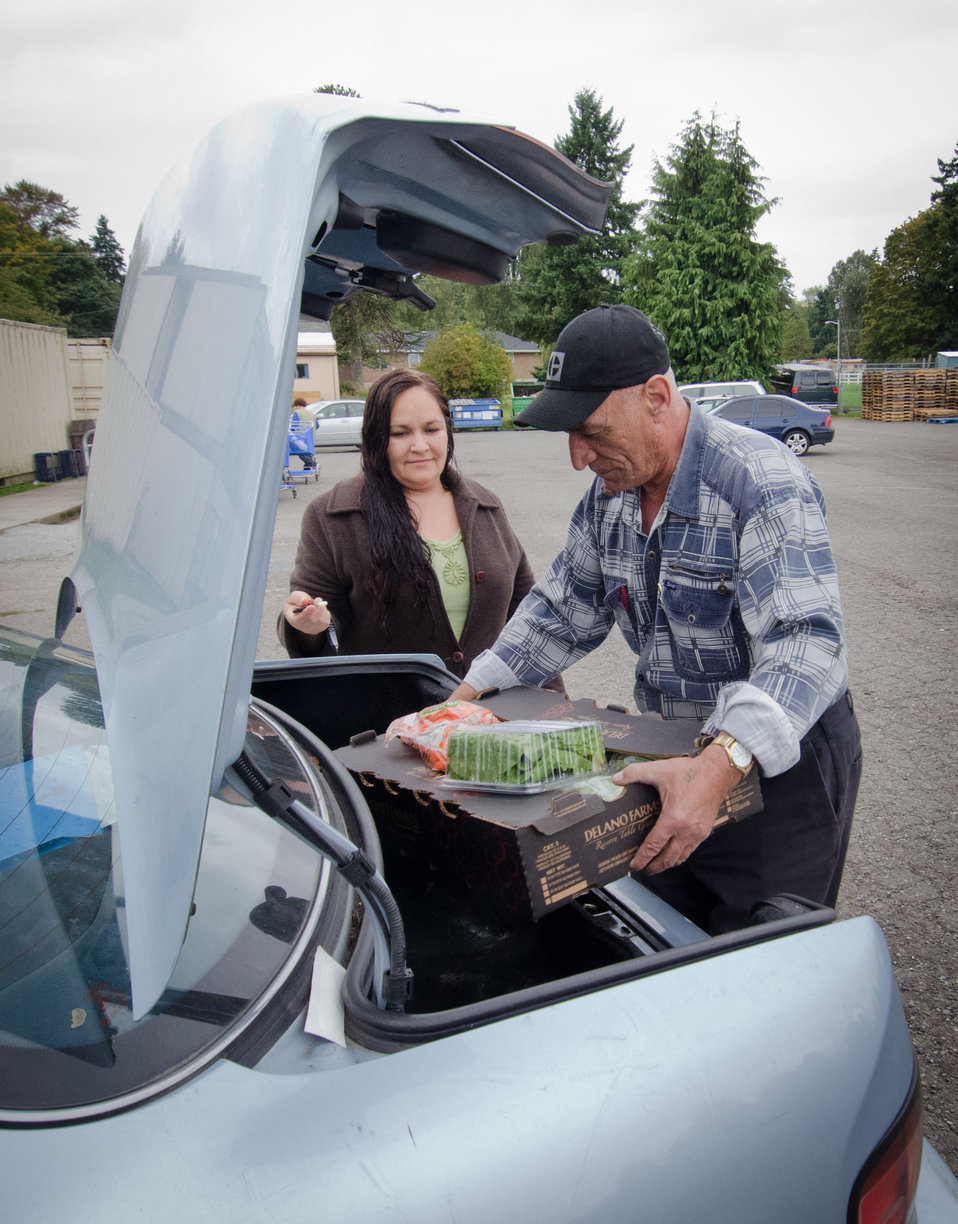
Mekhredze Telman (right) puts a box of produce in Amanda Arthur's car, at Tukwila Pantry, Tukwila. WA, on Thursday, October 20, 2011. The pantry provides monthly food bank services to individuals and families in cities of Tukwila, SeaTac, Burien and the Boulevard Park community. Congregate meal service is held each Tuesday at their location in the Riverton Park United Methodist Church. The church provides some funds, several large rooms, and outdoor operating space for the pantry’s food distribution, shipping container storage units, trailer, tents, shelters and refrigeration truck. The pantry's weekly Tuesday’s Table provides 150 hot meals to seniors, low-income families, homeless individuals and those in transition. Additionally, emergency referral services are provided to assist individuals connecting with agencies that can address their needs. Executive Director Joe Tice grew up in Tukwila and feels compelled to give back to economically challenged community of 25,000 families in 3,000 households. “Since the pantry’s founding in 2000, census figures show poverty has risen 300%,” said Joe Tice. “85-95% of elementary school children are enrolled in SNAP (U.S. Department of Agriculture Supplemental Nutrition Assistance Program).” At the pantry’s height, it delivered 3.8 million pounds of food (2009), but with the economic downturn Tice projects 2011 deliveries to total 2.6 million pounds. Tice, considers Tukwila Pantry as one of the smaller distribution points in the greater Seattle area. Some canned and dry goods are provided by
The Emergency Food Assistance Program (TEFAP) a Federal program that helps supplement the diets of low-income needy persons, including elderly people, by providing them with emergency food and nutrition assistance. A significant amount of the pantry’s food comes through Northwest Harvest, Washington's only nonprofit statewide food bank distributor; and Food Lifeline, the largest nonprofit food distributor in the state who solicit, receive, and distribute over 24 million meals of food to nearly 700,000 people through our network of 300 food banks (such as Tukwila Pantry), shelters and meal programs.